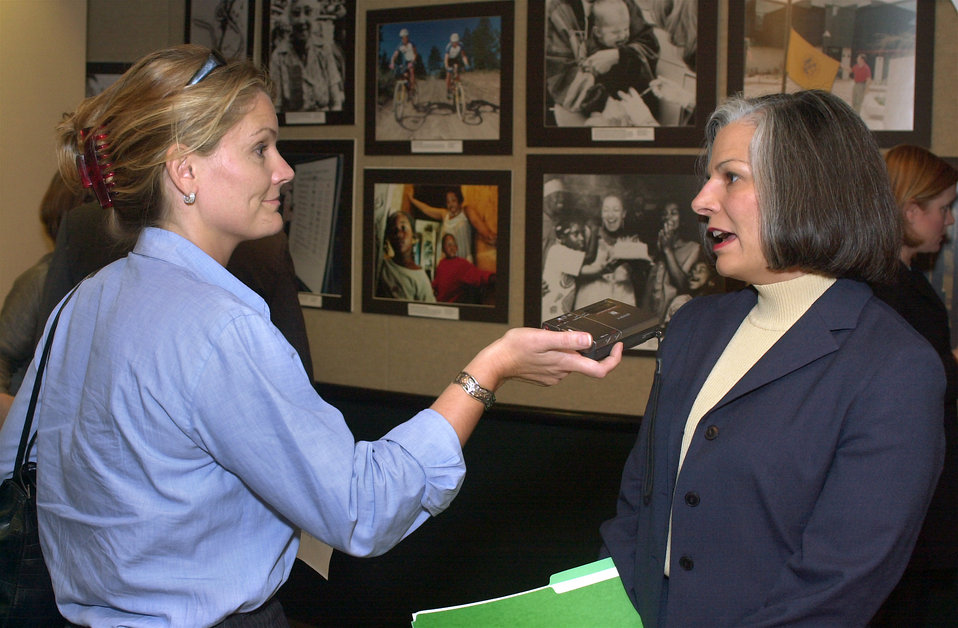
Former Director of the CDC (2002 - 2008), Julie Gerberding MD, MPH, speaks with a reporter during August's Bioterrorism Preparedness Press Briefing.